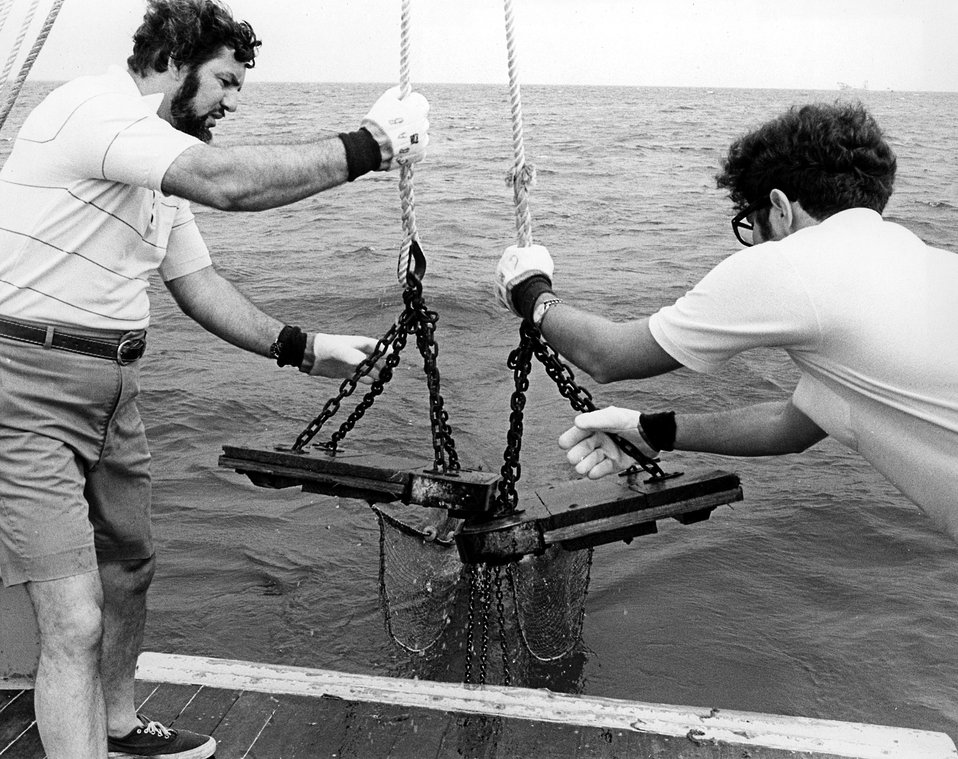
University of Maryland scientists lower a trawl net from the deck of the research vessel Orion to capture fish and crab in Chesapeake Bay. Circa 1972.